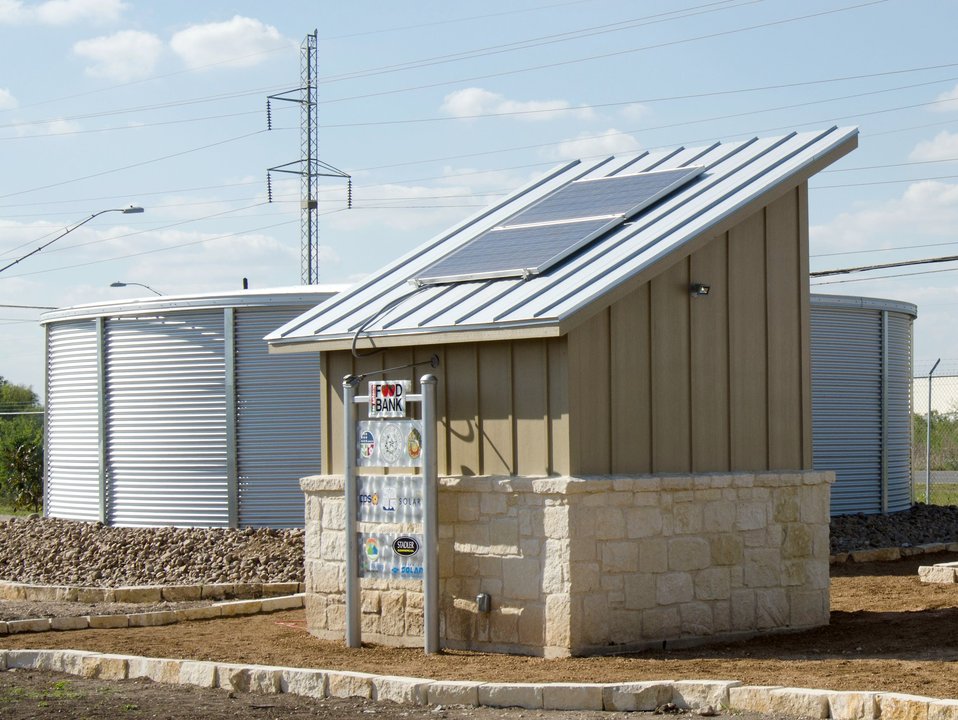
The Spurs Community Garden is part of the San Antonio Food Bank’s (SAFB) Nutrition Education Program which provides garden fresh organic produce to one of it’s sponsors, the United States Department of Agriculture (USDA) Supplemental Nutrition Assistance Program - Education Program (SNAP-ED) uses some of the produce for nutrition education, economical ways to increase fruit and vegetable consumption and physical exercise on it’s walking trail to get fit.
A new feature of the SAFB complex is its Energy Conservation project which includes a lower energy lighting retrofit throughout the headquarters building, and in the Spurs Community Garden an 81 kW solar photovoltaic system. A rainwater harvesting system on the headquarters building roof collects and stores rainwater in the metal tanks here in San Antonio, TX, on Monday, October 31, 2011. The project was funded by the American Recovery and Reinvestment Act (ARRA) of 2009, through the Department of Energy Efficiency & Conservation Block Grant Program.
The 5.5-acre garden has a teaching/demonstration garden, large –production gardens, and bee hives. In its first year of operation the garden produced 2,640 pounds of produce and attracted 602 volunteers to support it’s operation and improvement. Most of the produce goes to the more than 500 human service agencies and used in its Community Kitchen to support various meal programs. (For more information go to: safoodbank.org/index.php/programs/nutrition/community-garden).
“We couldn’t do what we do without our partnership with USDA’” said President and CEO Eric Cooper. He continues, “We are privileged in partnering (with the USDA) to feed kids, through the summer, with the Summer Food Service Program, and throughout the year, with the Child and Adult Care Feeding Program (CACFP). Then in our approach to feeding seniors, we partner with USDA in the CSFP, and the Senior Farmer’s Market (Nutrition) Program. …You know, once families have access to food we believe it is important to educate them. Through the support of the SNAP-Education Program we are able to educate them during their time of need. With this comprehensive approach we are really able to get the right food, at the right amount, at the right time, to needy families throughout our community – which allows us to feed the fifty-eight thousand we do, each week.”
SAFB serves 16 counties in Southwest Texas and states, “Nearly one out of every four children and one out of every five adults in Southwest Texas lives in poverty and has difficulty meeting basic nutritional needs.” According to SAFB, sixty-five percent of the people requesting emergency food have children. “Additionally, the senior citizens and those living on a fixed income generally have limited funds for a consistent grocery budget.” USDA photo by Lance Cheung.

www.fns.usda.gov/fns/
www.fns.usda.gov/snap/
www.fns.usda.gov/snap/nutrition education/default.htm